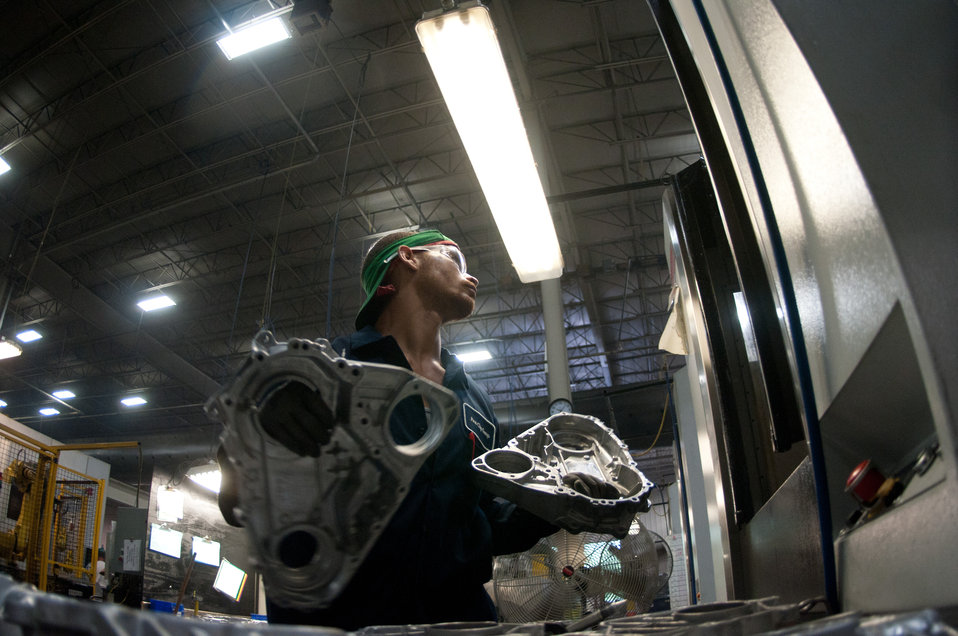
Computer Numerical Control (CNC) machine operator Blake Veeneman makes a inspects a casting at the Port City Group’s Port City Castings Corporation manufactures high-pressure aluminum die-castings, mostly for the automotive industry, in Muskegon, MI, facility on Wednesday July 20, 2011. Port City Group boosted its employment by 12 percent over last year thanks to two Rural Business Guaranteed Loans totaling $9.6 million. In its 80,000 sq. ft. facility, machines that range from 800 – 1,600 tons, and cast A380 aluminum alloy products from melted ingots of aluminum, into automotive components of U.S.A. made vehicles. The process features a variety of robotic presses; computer controlled machining; quality control facility; and complete measurement and testing laboratory. In 2009 banks were backing out of loans for PCG equipment purchase agreements. The U.S. Department of Agriculture (USDA) loan guarantee helped make the loan possible with its guarantee. PCG obtained the needed robotic and other equipment. This resulted in a stable workforce that has since grown. When asked about their USDA experience, Port City Group Sales Manager Laura LaGuire said, “It was great! They were very helpful. Everything that came up was handled smoothly, the money came in place when it was needed, and it was a very smooth transition.”